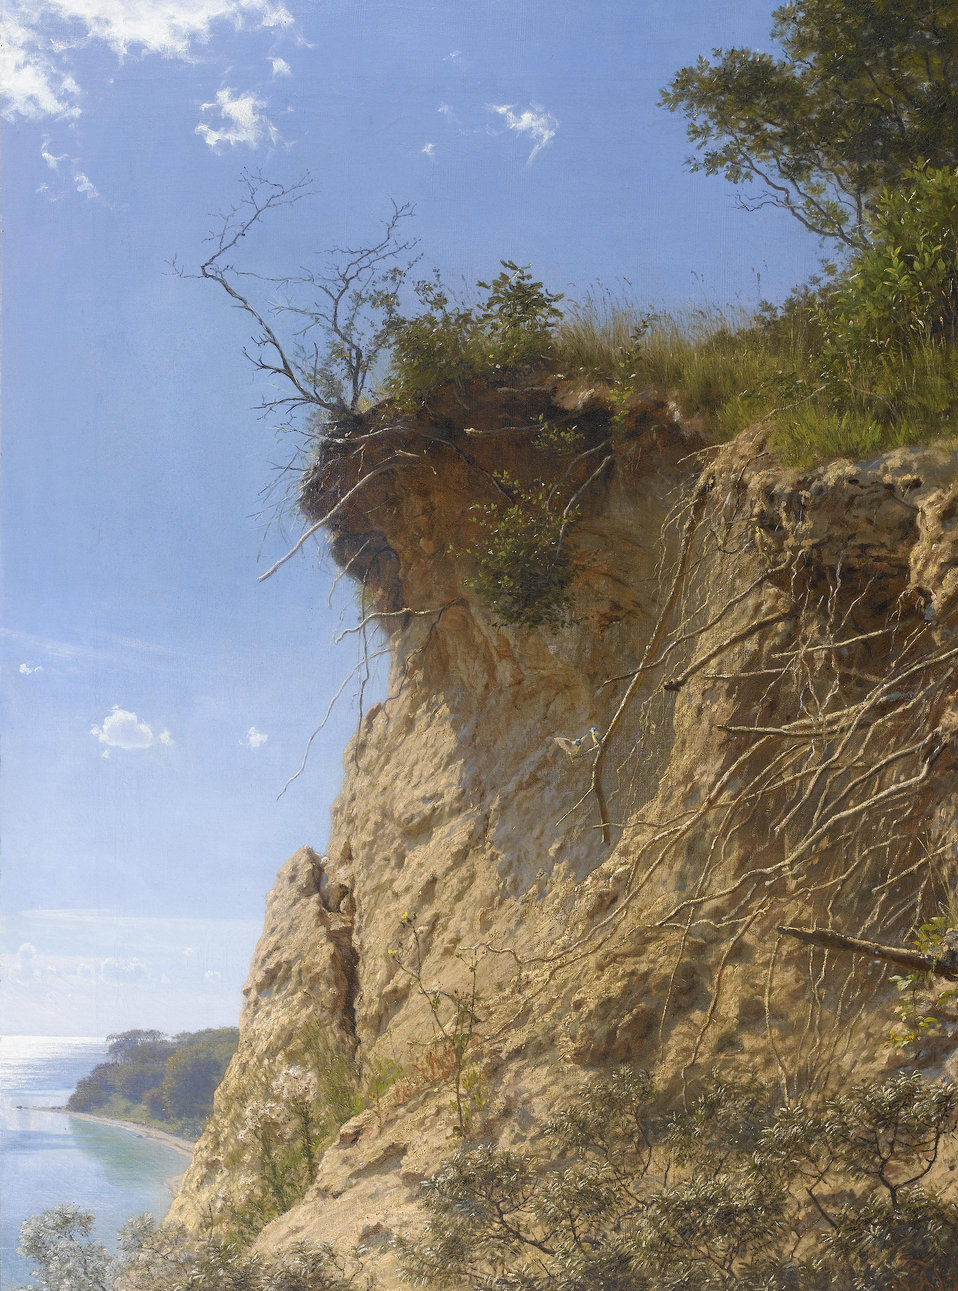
August Andreas Jerndorff - Klippekanten (1870)